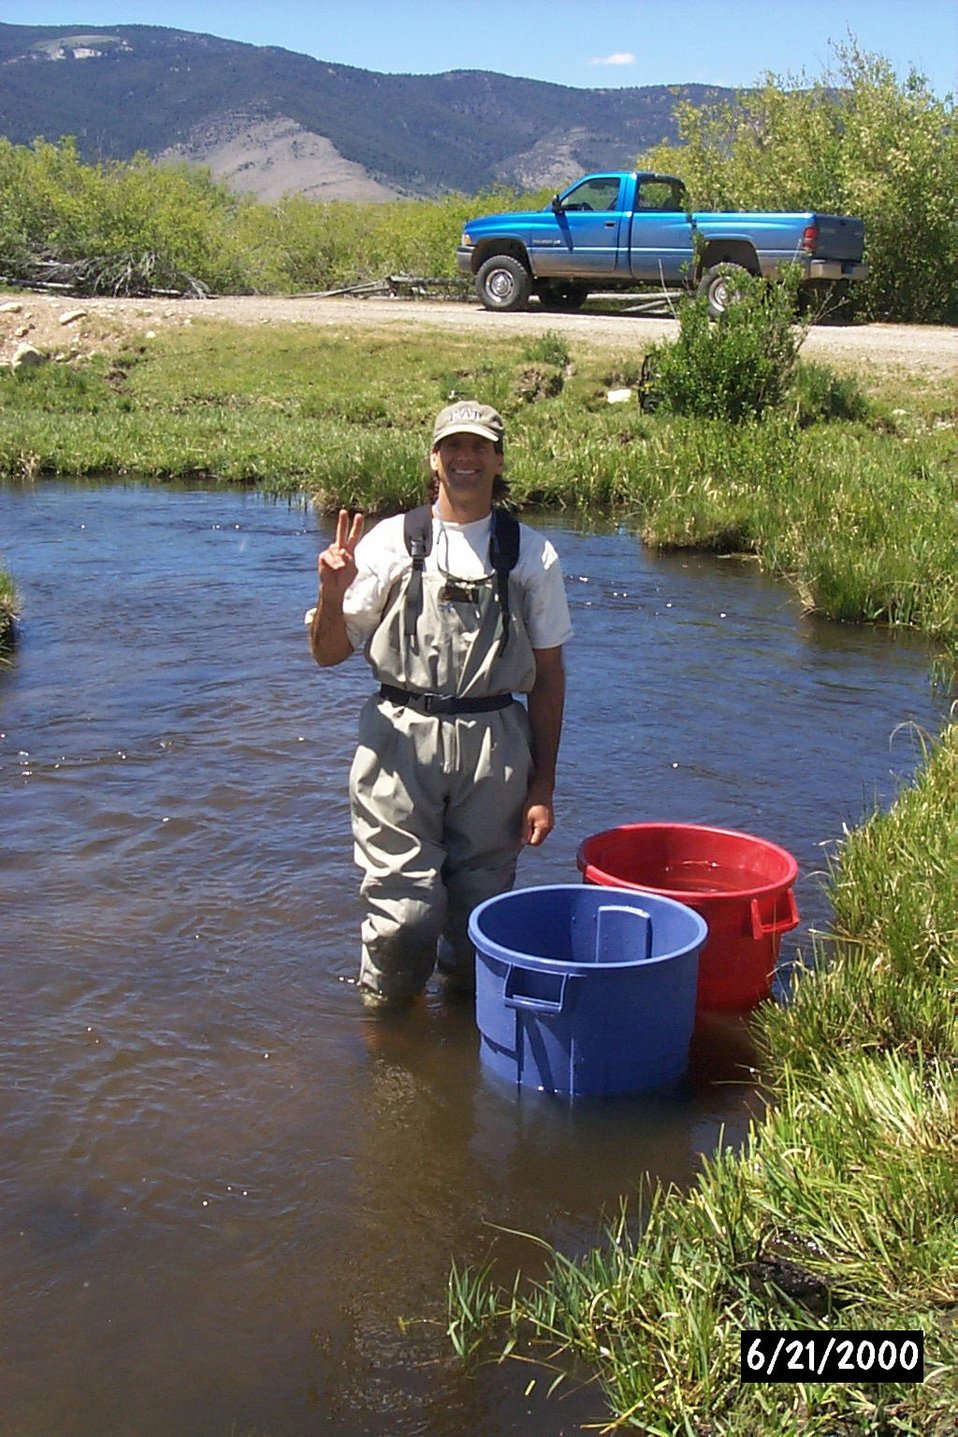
People Salmon Field Office UCSC Upper Columbia Salmon Clearwater District